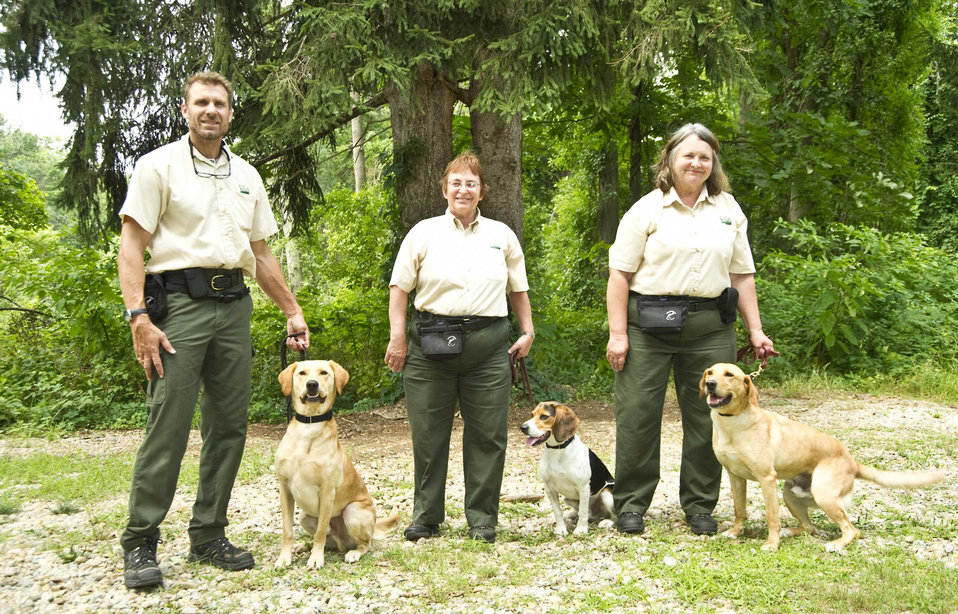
(L to R) U.S. Department of Agriculture (USDA) Animal and Plant Health Inspection Service (APHIS) training specialist and Asian Longhorned Beetle (ALB) Detector Dog Labrador retriever RJ, USDA APHIS training specialist and Project Team Leader with ALB Detector Dog beagle Merlin, and USDA APHIS training technician Kathleen Warfield with ALB Detector Dog Labrador retriever Blaze stand in front of a forested area in Worcester, MA on Aug. 1, 2012. The ALB is an invasive insect that is killing trees in Massachusetts, New York, New Jersey and Ohio. Four dogs are currently being trained to recognize beetle “frass” or excrement that the beetle leaves behind. This study is part of an important mission to protect neighborhood trees and this country’s valuable forest resources from this harmful pest.